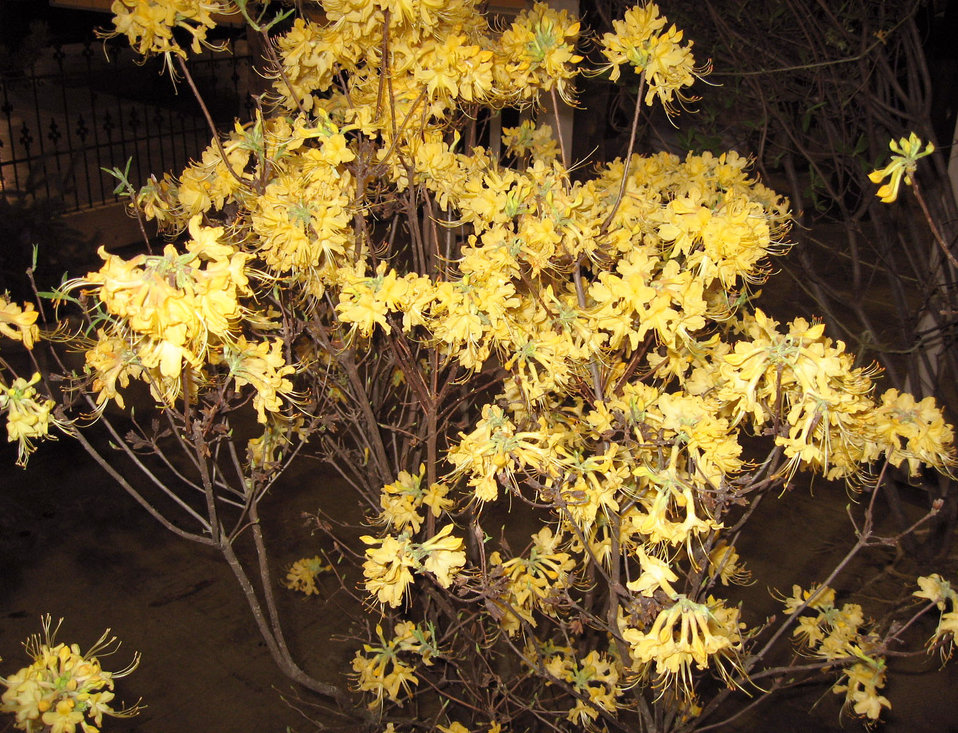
Florida flame azalea

Rhododendron austrinum (Florida flame azalea), a native plant

Learn more about EPA’s Exhibit at the 2010 Philadelphia International Flower Show:
www.epa.gov/reg3esd1/garden/flower show.htm
www.epa.gov/reg3esd1/garden/flower show plants.htm
www.epa.gov/reg3esd1/garden/pdf/flowershow2010.pdf (6 pp, 864K)